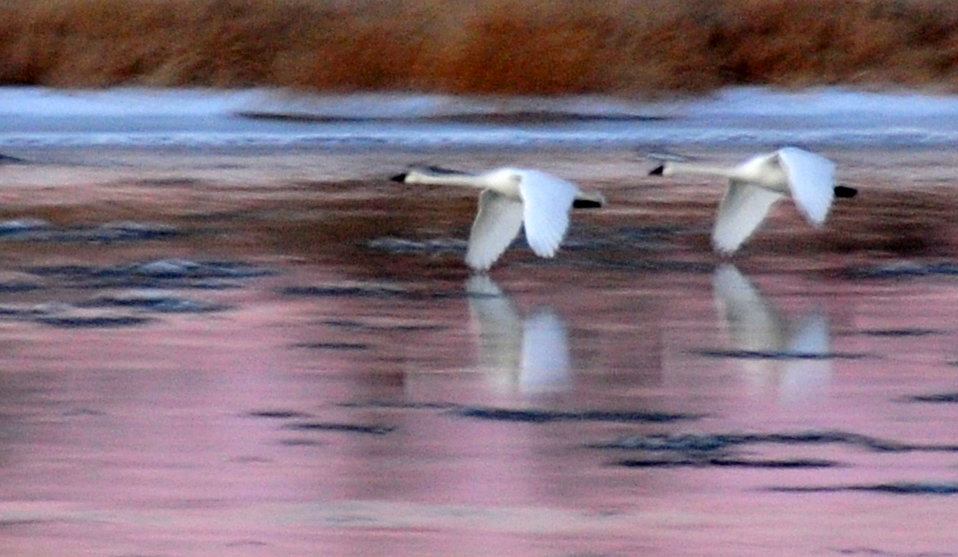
Trumpeter Swans at Sunset on Seedskadee NWR

Trumpeter swan pair flying upstream at sunset on Seedskadee National Wildlife Refuge.